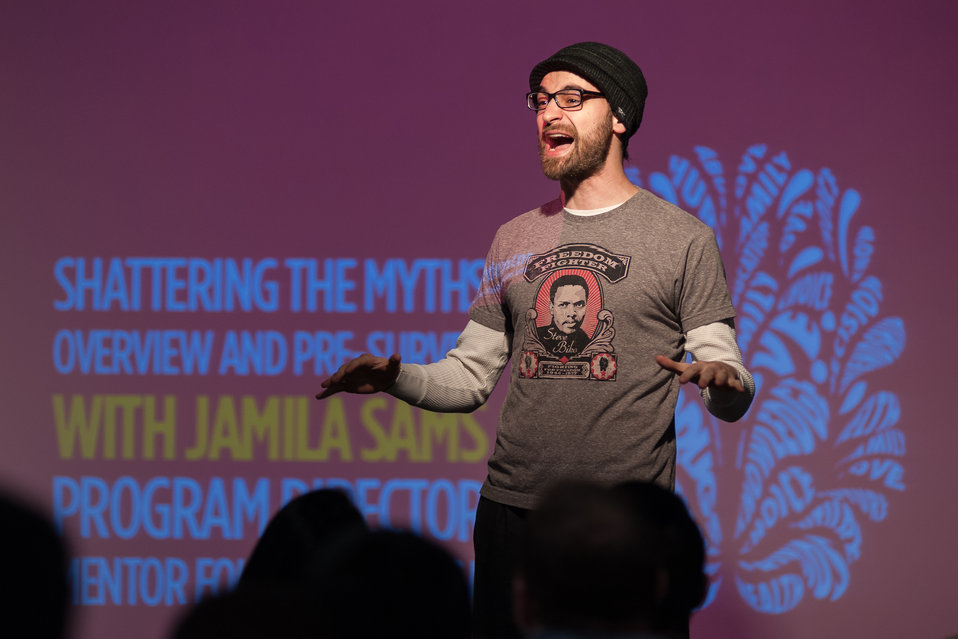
Mentor NDFW Event 2014

Mentor Foundation USA, in partnership with the National Institute on Drug Abuse (NIDA) and other key partners hosted a Youth Drug Facts Rally at the House of Sweden on Thursday, 30th January 2014. Approximately 200 students from five local high schools attended and had the opportunity to interact with top U.S. scientific experts, and inspiring guest speakers to “shatter the myths” about drugs and substance abuse, while pledging to stay drug-free.